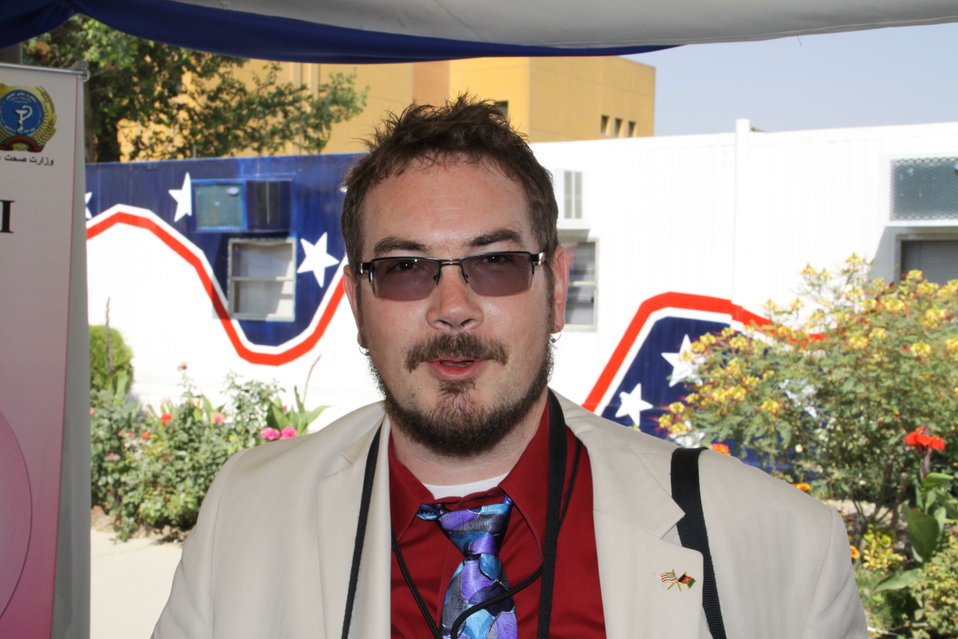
Kabul Official July 4th Celebration